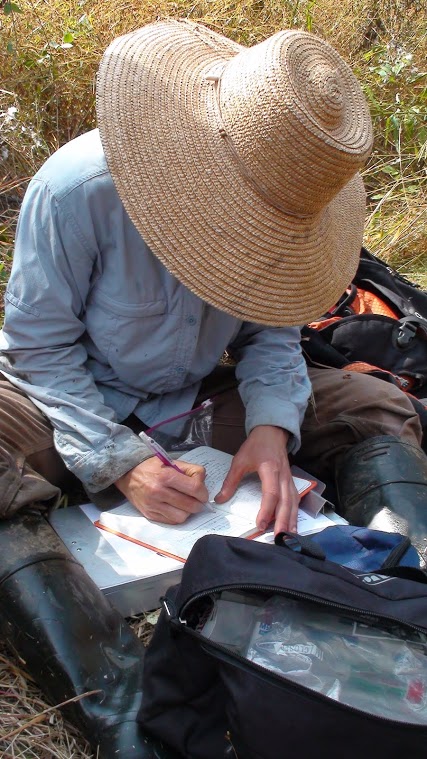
Bog turtle

Scientific name: Clemmys muhlenbergii
Status: Threatened and Similarity of appearance

Gabrielle Graeter taking notes.